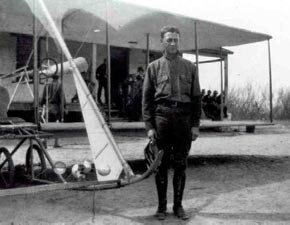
Maj. Gen. Benjamin D. Foulois

Early Years -- Maj. Gen. Benjamin D. Foulois